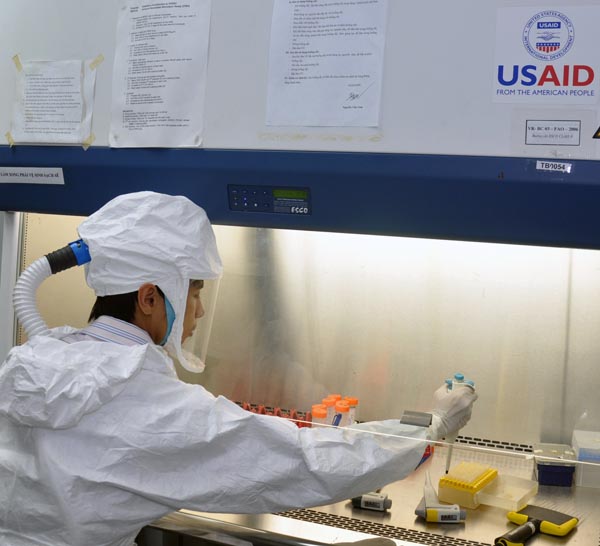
USAID support to laboratories helping control viruses in Vietnam

USAID has provided equipment as part of an activity with FAO to support laboratories studying viruses in Vietnam.